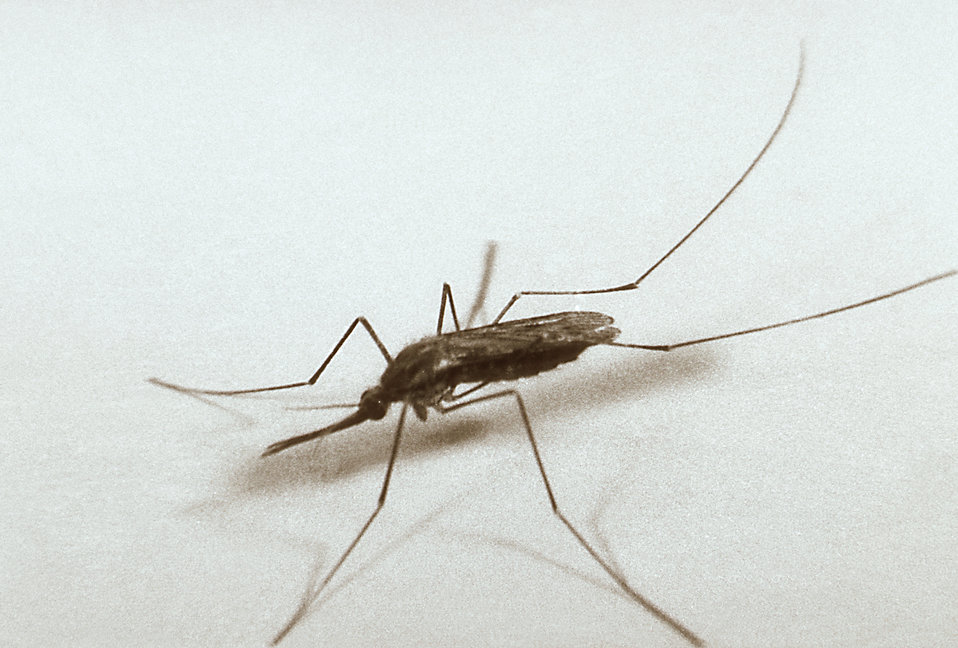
This is a photograph of an Anopheles quadrimaculatus mosquito.